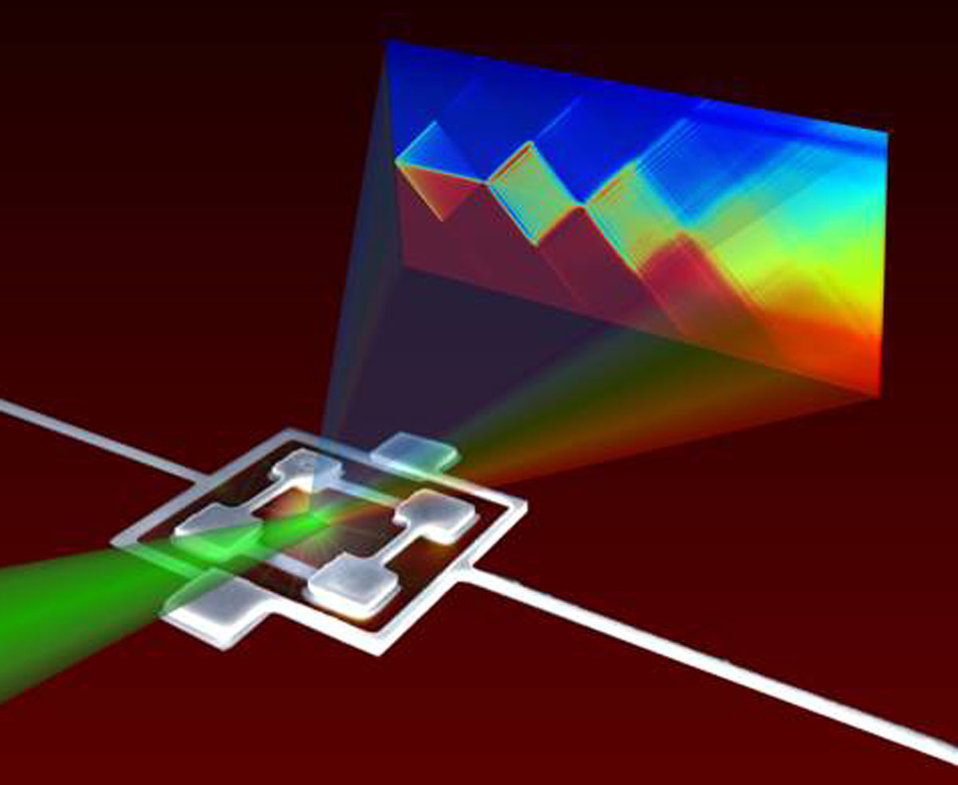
MIT research enhances high-speed computers

This conceptual illustration shows amplitude spectroscopy probing a superconducting artificial atom (white object) via a microwave magnetic field with a fixed frequency (green beam). Changing the amplitude of those microwaves generates rich interference patterns (projection), the spectroscopy diamonds, which serve as a